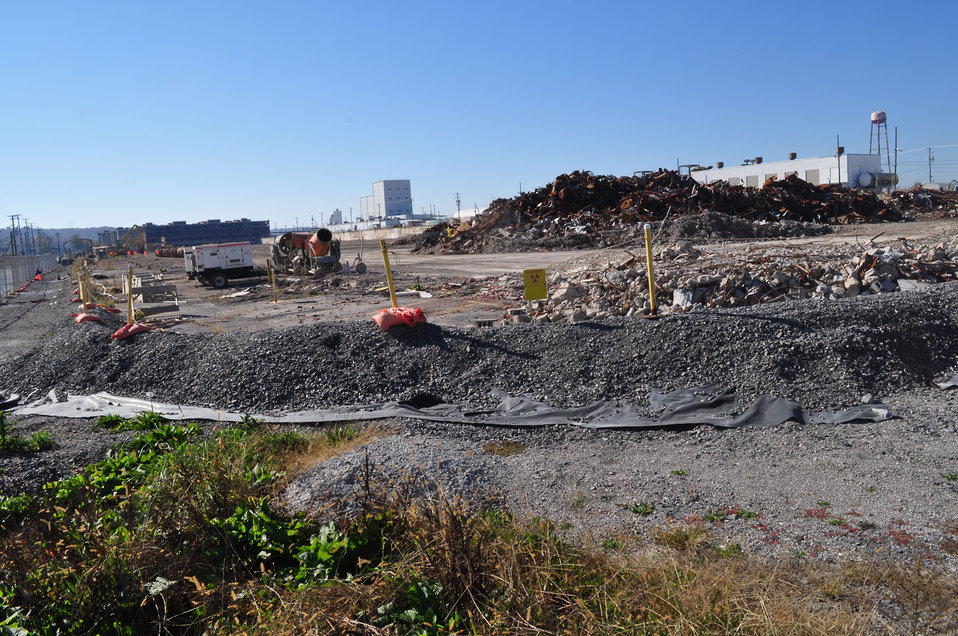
8

K-25